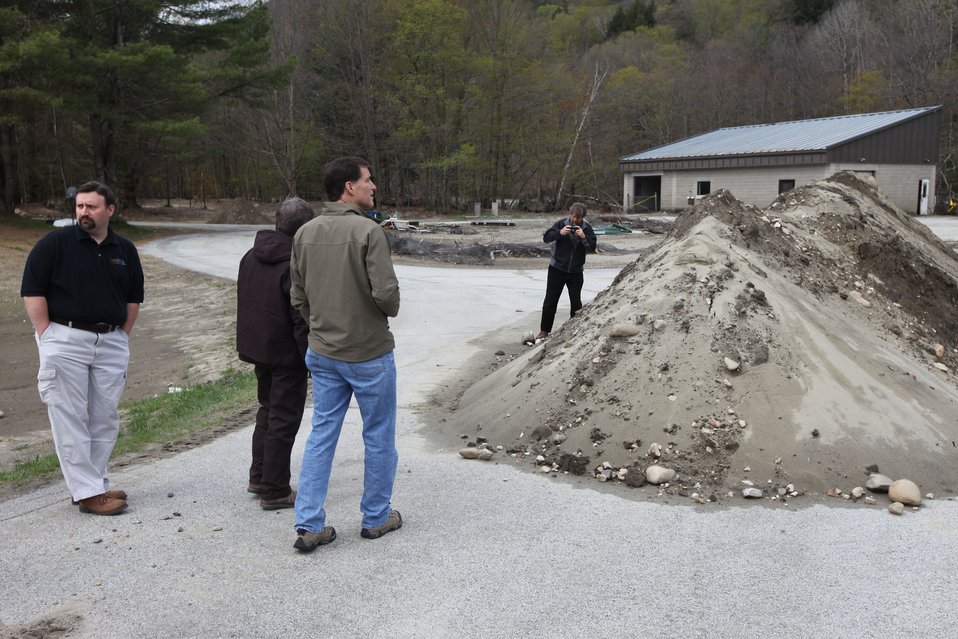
USFWS Director Dan Ashe views clean-up efforts

U.S. Fish & Wildlife Service Director Dan Ashe visits the Northeast Region
for a tour of the White River National Fish Hatchery in Bethel, Vermont on
April 27, 2012. The hatchery was devastated by Tropical Storm Irene and
Dan Ashe had the chance to meet and thank the staff for their heroic work.
Director Ashe also visited restoration/flood response/fish passage project
sites in Rochester, Vermont and met with local officials and staff from the
White River Partnership.